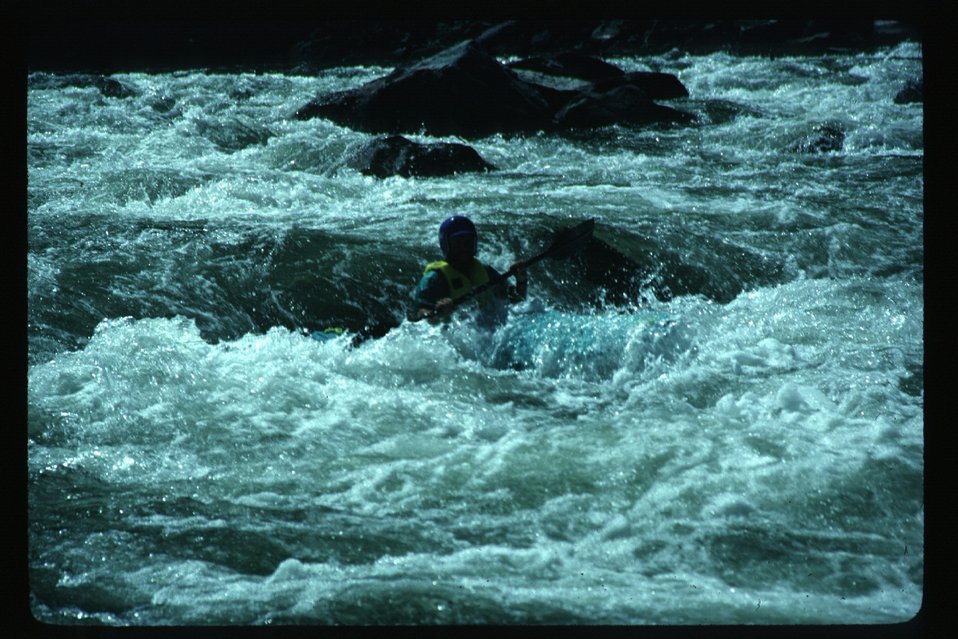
Kayaker in white water Kayaking Four Rivers Field Office LSRD Lower Snake River District